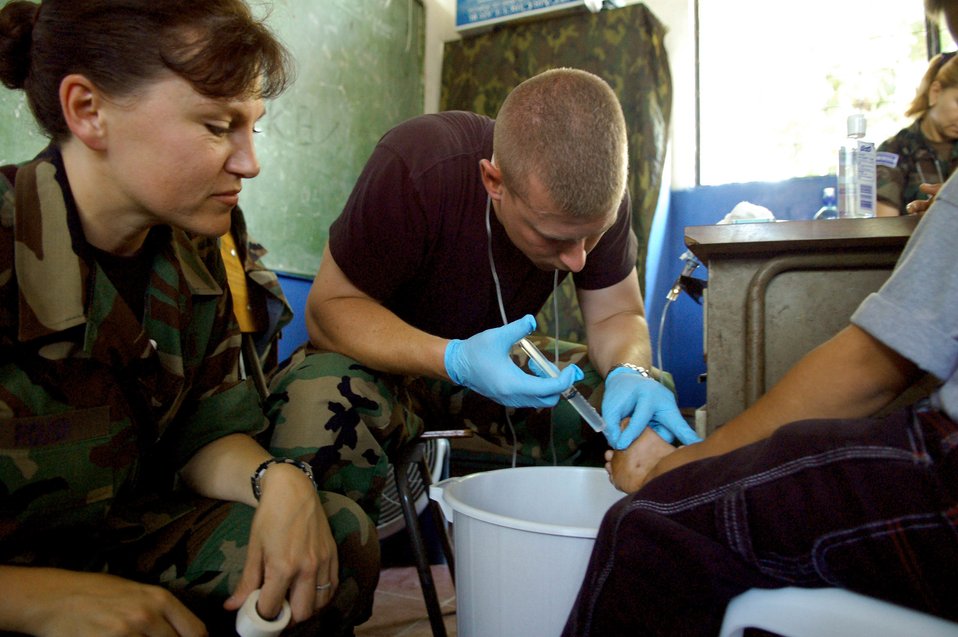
JTF-Bravo participates in El Salvador MEDRETE

Tech. Sgt. Josh Sigler sterilizes a deep cut on a young Salvadorian boy's foot as Tech. Sgt. Angel Roush observes Sept. 27 at a makeshift clinic in San Juan Opico, El Salvador, during a medical readiness training exercise. Sergeants Sigler and Roush are members of the Joint Task Force-Bravo Medical Element. JTF-Bravo members participated with the Salvadorian militaries in the exercise.